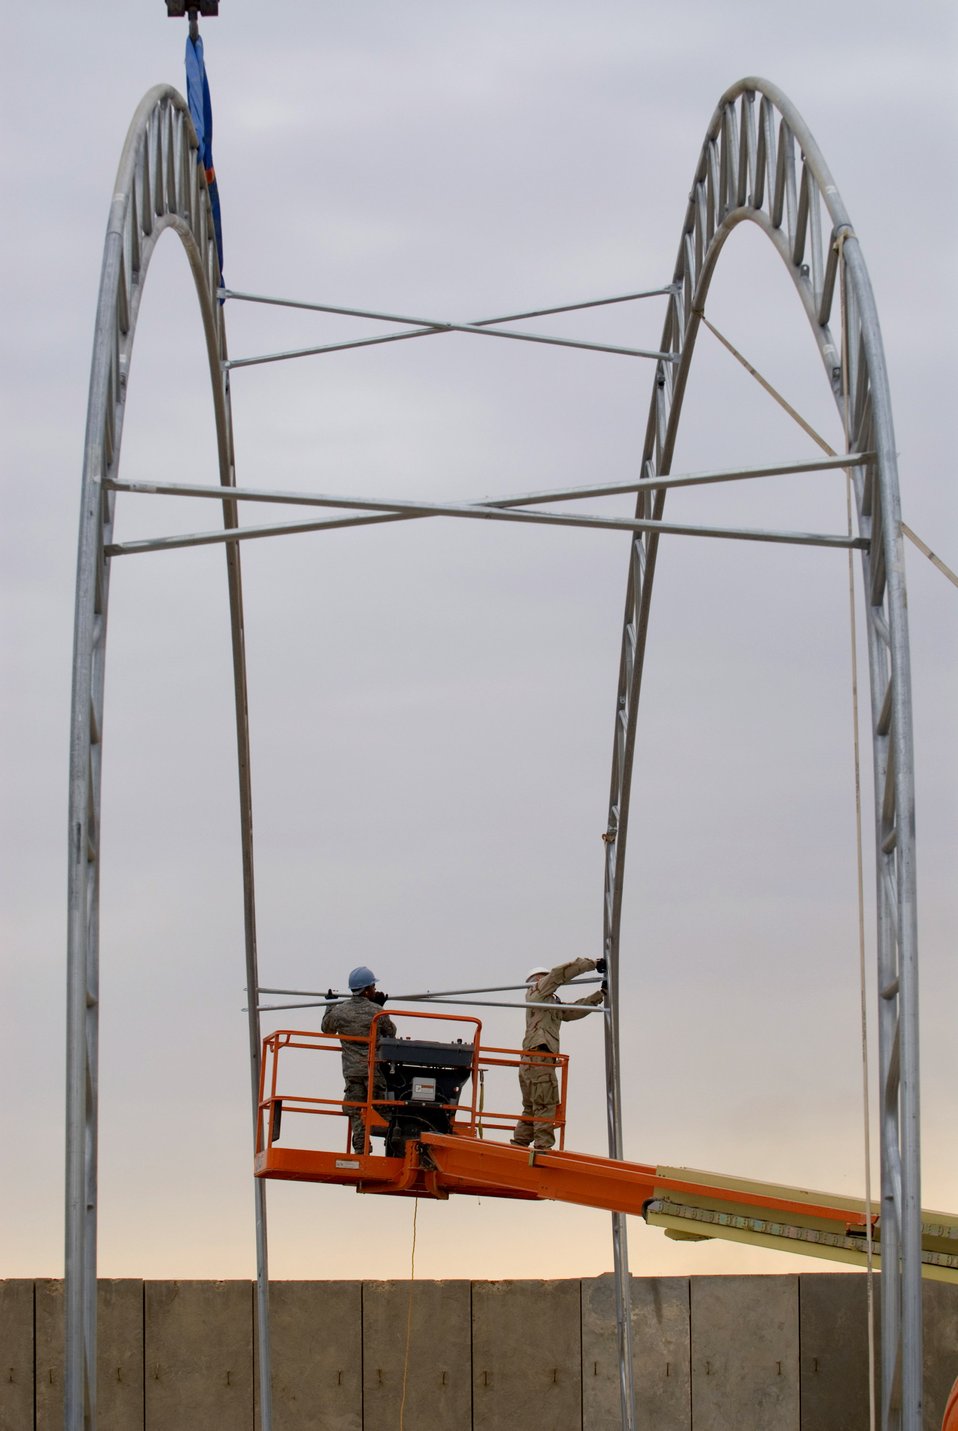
Raise the roof

Members of the 332nd Expeditionary Civil Engineer Squadron erect the frame of a temporary shelter Dec. 5 at Balad Air Base, Iraq. The shelter will be used by the 332nd ECES Explosive Ordnance Disposal Flight.